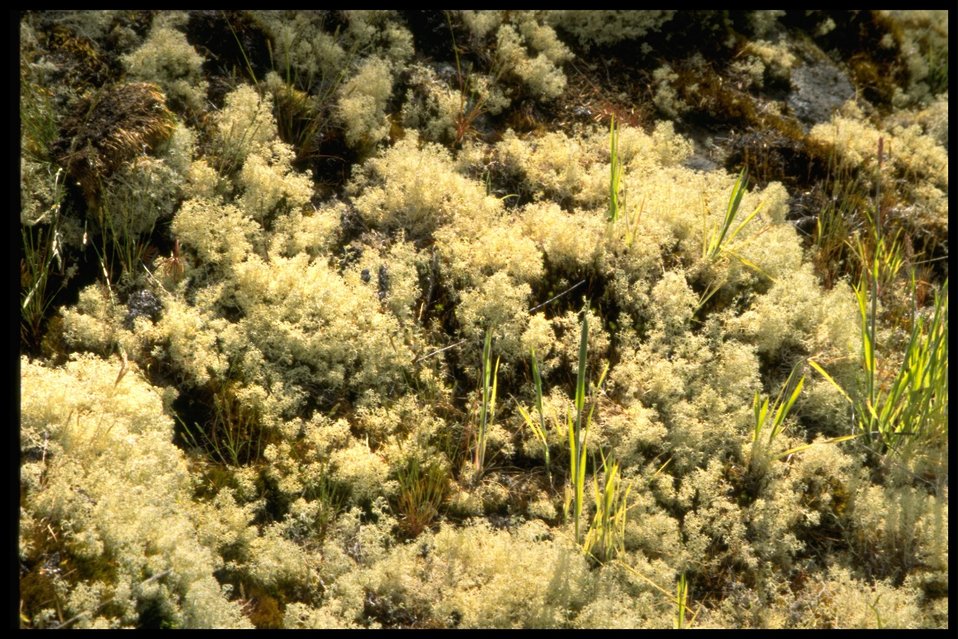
Close up of Lichen at Point Colville.